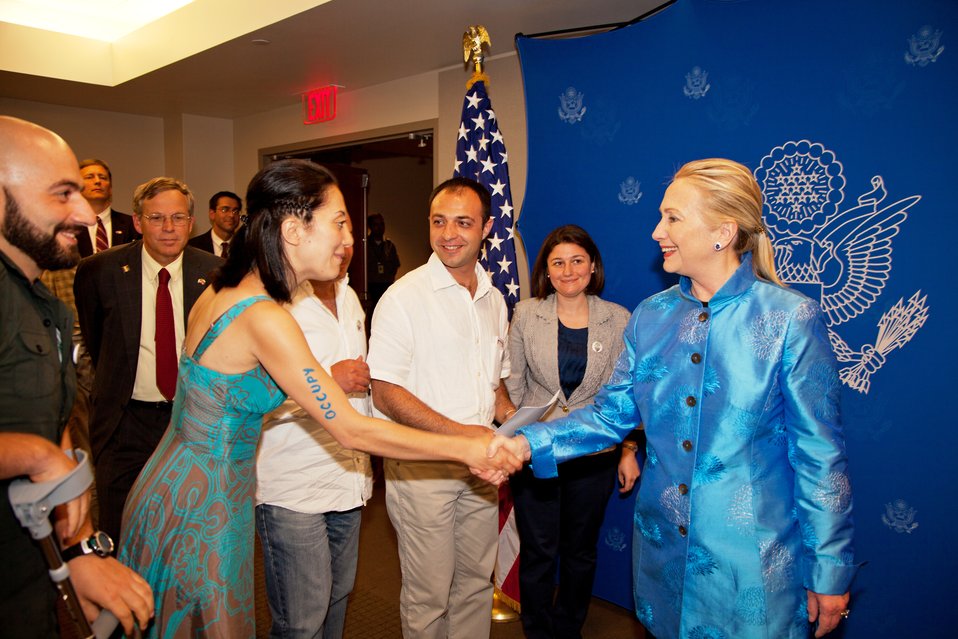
Secretary Clinton Meets With Armenian Environmental Activists

U.S. Secretary of State Hillary Rodham Clinton meets with Armenian environmental activists in Yerevan, Armenia, on June 4, 2012.